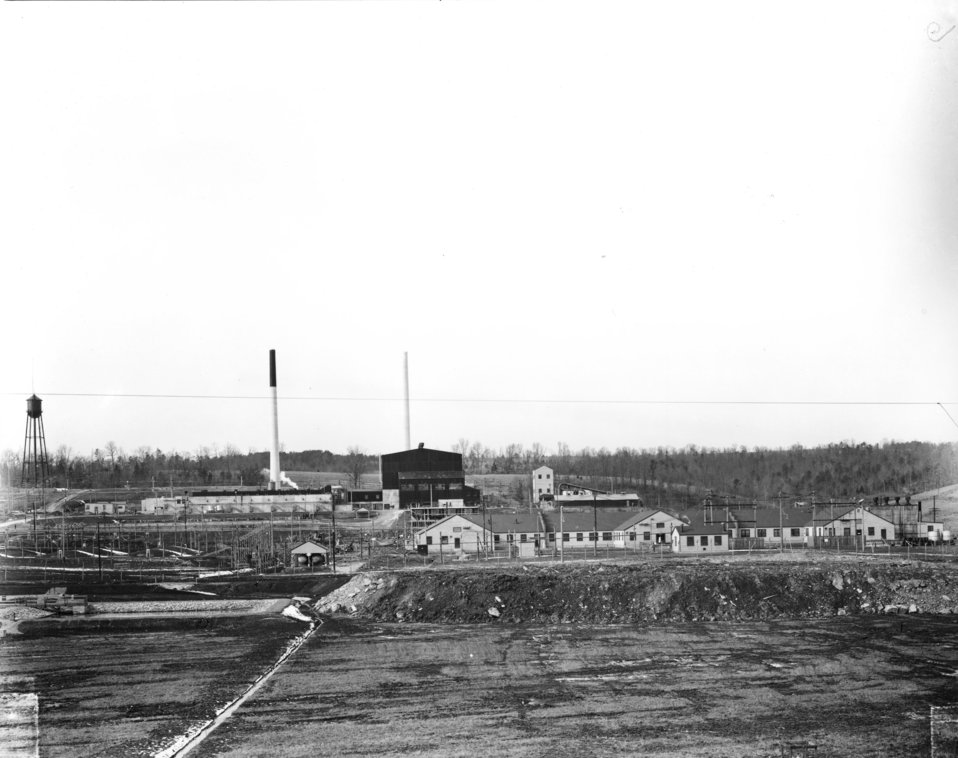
X-10 at Oak Ridge